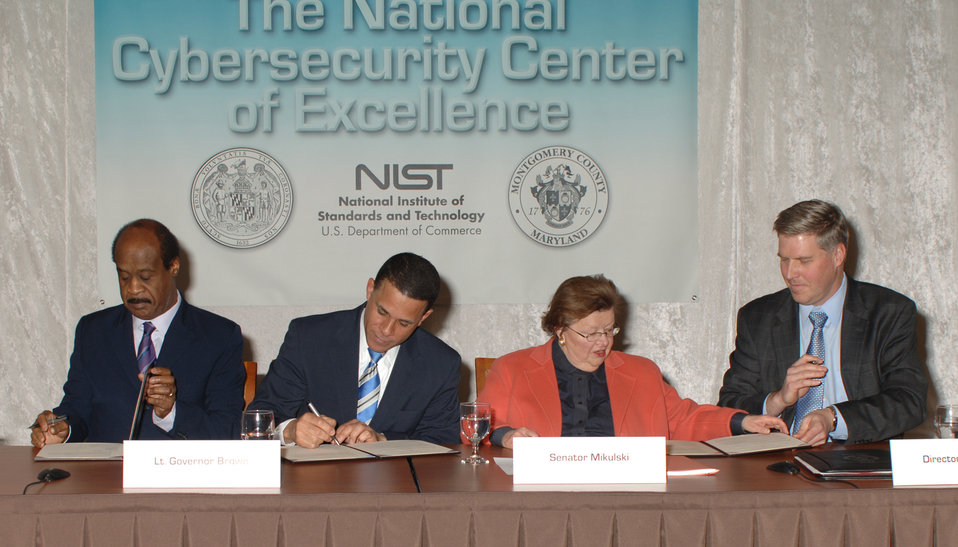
NIST Launches New Collaborative Center for Cybersecurity

The State of Maryland and Montgomery County, Md., partner with NIST in the New National Cybersecurity Center of Excellence. At the Memorandum of Understanding Signing Feb. 21, from left to right, Montgomery County Executive Isiah Leggett, Maryland Lt. Governor Anthony Brown, U.S. Senator for Maryland Barbara Mikulski and Under Secretary of Commerce for Standards and Technology and NIST Director Patrick Gallagher.